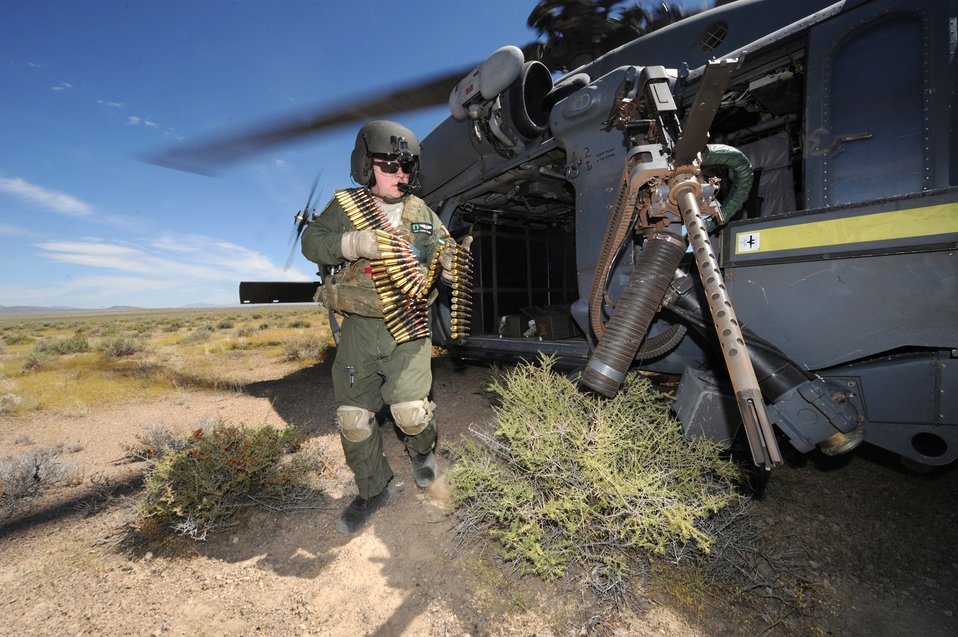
California Guard participates in firing mission

Staff Sgt. Andrew Gibson carries .50- caliber machine gun ammo to reload an HH-60 Pave Hawk during a fixed forward firing mission June 25, 2010, at the Nevada Test and Training Range. Sergeant Gibson is a flight engineer assigned to the California Air National Guard's 129th Rescue Squadron at Moffett Field, Calif.